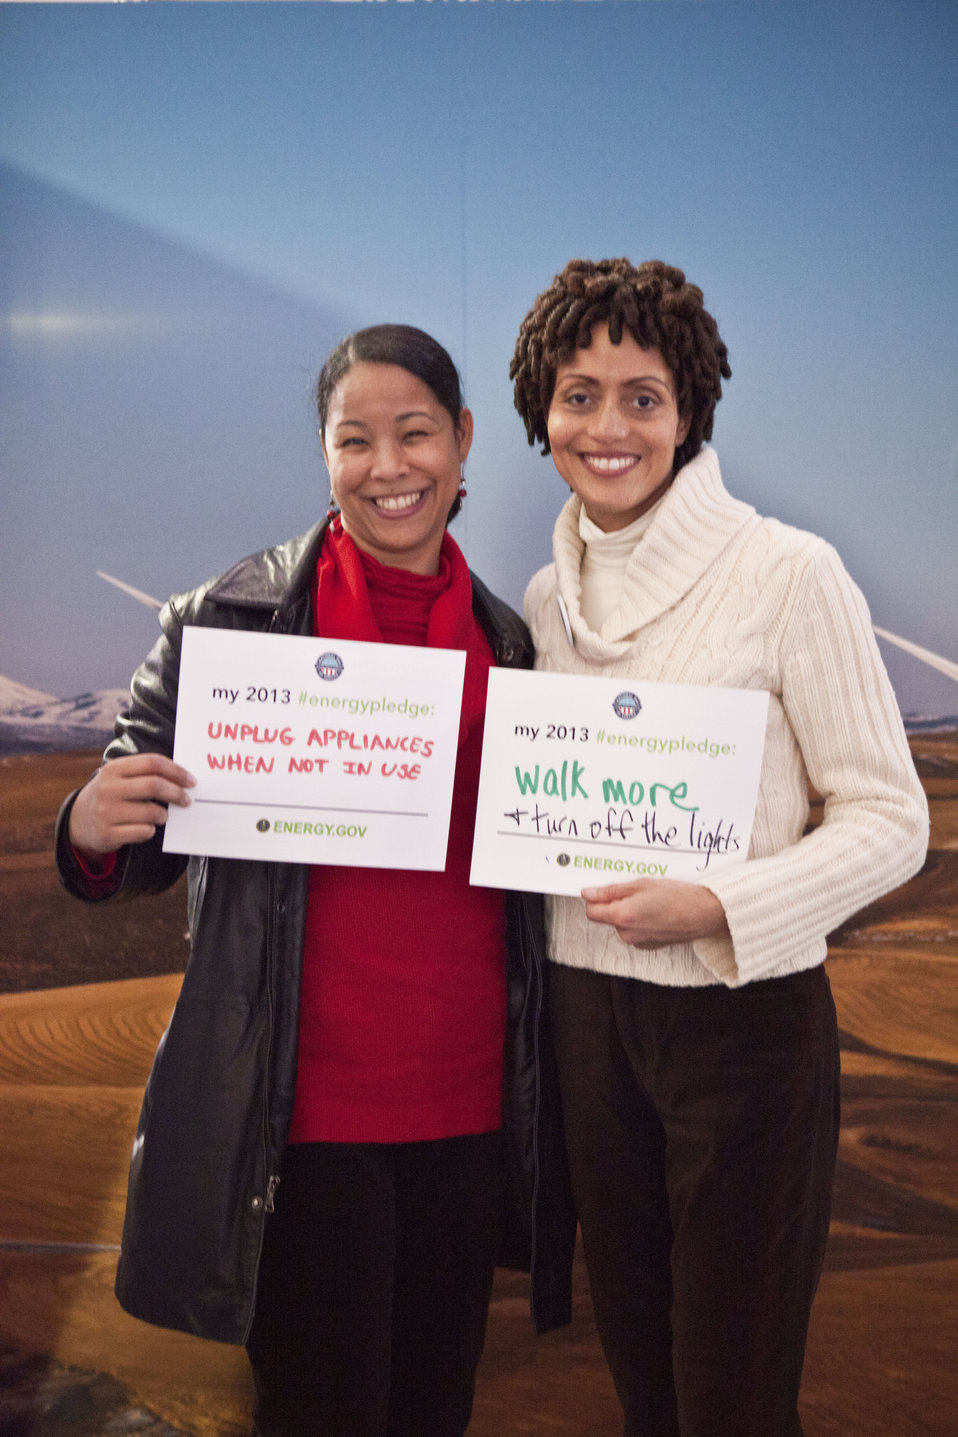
What's your #energypledge?